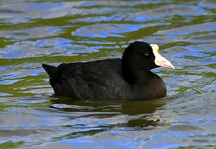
Coot - Huleia NWR

The Hawaiian Coot prefers wetland and lowland valley habitats. They can fly but usually do so only close to the water.